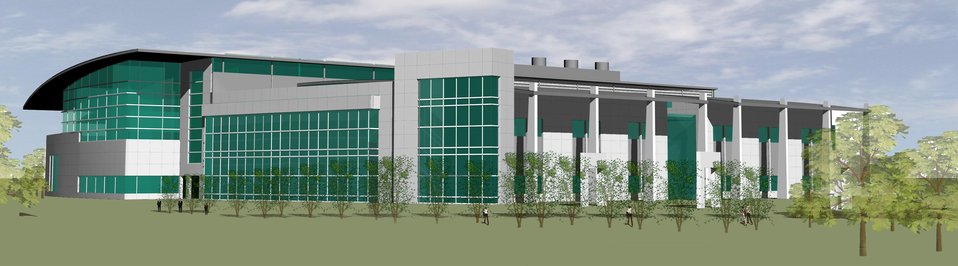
ARTIST'S CONCEPT OF THE CENTER FOR FUNCTIONAL NANOMATERIALS AT BROOKHAVEN NATIONAL LABORATORY.

THE NANOSCALE SCIENCE RESEARCH CENTERS (NSRCS) SUPPORTED BY BASIC ENERGY SCIENCES WILL BE RESEARCH FACILITIES FOR THE SYNTHESIS, PROCESSING, AND FABRICATION OF NANOSCALE MATERIALS. THEY WILL BE COLLOCATED WITH EXISTING USER FACILITIES TO PROVIDE SOPHISTICATED CHARACTERIZATION AND ANALYSIS CAPABILITIES. IN ADDITION, NSRCS WILL PROVIDE SPECIALIZED EQUIPMENT AND SUPPORT STAFF NOT READILY AVAILABLE TO THE RESEARCH COMMUNITY. NRSCS WILL BE OPERATED AS USER FACILITIES AND BE AVAILABLE TO ALL RESEARCHERS.